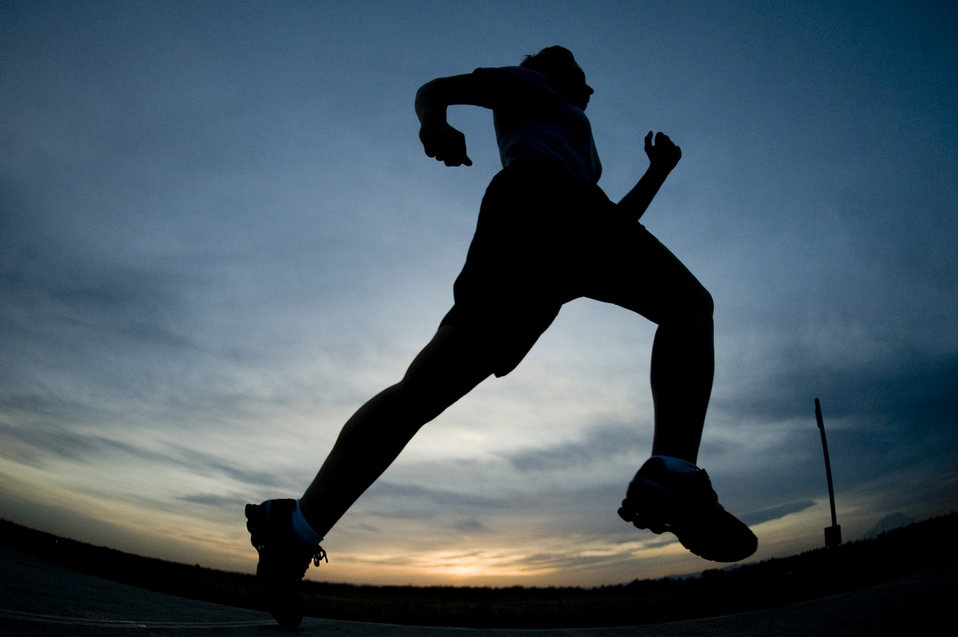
Fitness testing begins for deployed Airmen

Airmen deployed to the U.S. Central Command area of responsibility will roll physical fitness testing into their wartime responsibilities starting Oct. 1. The new USAFCENT fitness policy will be available soon on AEF Online at https://aef.afpc.randolph.af.mil.